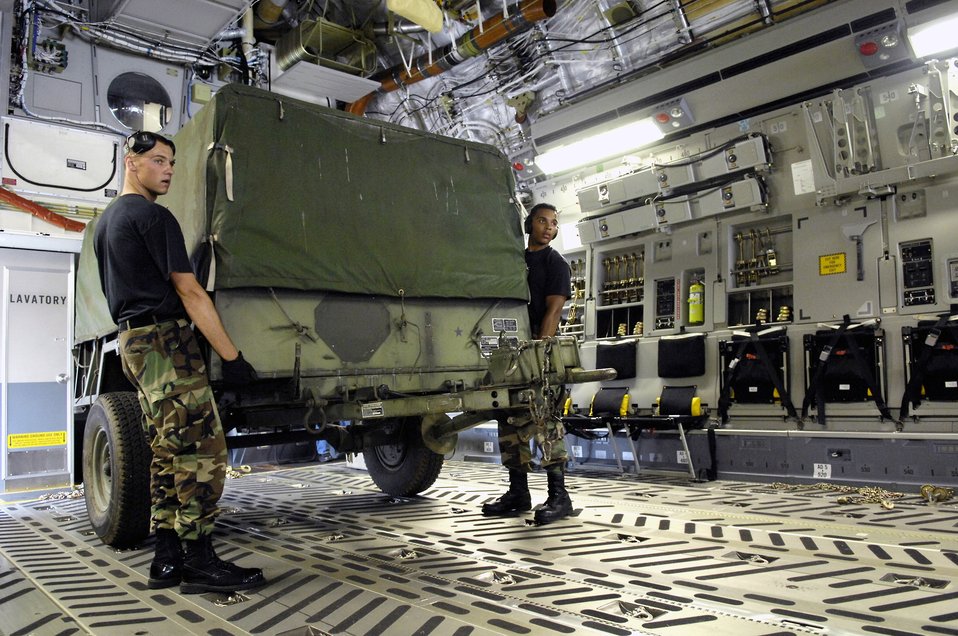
Hickam Rodeo team ready to go

Airman 1st Class Trever Bush and Airman 1st Class Daray Davis wait to hitch their trailer to a Humvee July 13 during Rodeo practice at Hickam Air Force Base, Hawaii. The team is practicing for the upcoming Air Mobility Command Rodeo at McChord AFB, Wash. The Airmen are from the 15th Logistics Readiness Squadron Combat Mobility Element and are part of Hickam's Rodeo team.